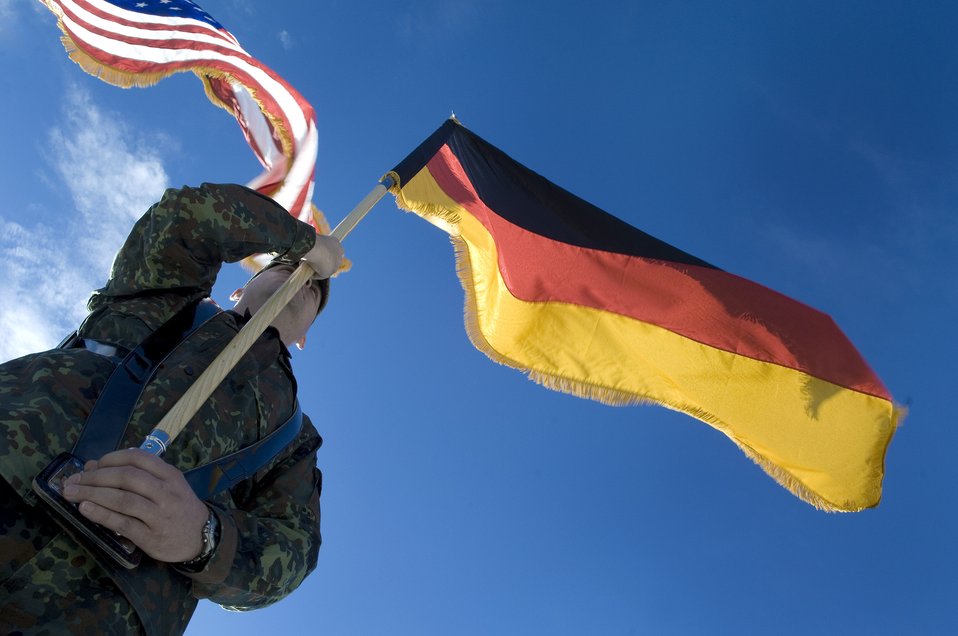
German airman assists with Holloman ceremony

German air force Senior Airman Steffen Hanke holds the German flag while training with U.S. Air Force honor guard members of the 49th Mission Support Squadron Jan. 15 at Holloman Air Force Base, N.M. Airman Hanke was selected to join the base honor guard team and has more than seven years of honor guard experience with the German air force. Holloman AFB is host to the German Air Force Tactical Training Center with more than 300 German air force members stationed there. Germany is one of the strongest allies of the U.S. in NATO and the joint training is important for allied armed forces to train together to ensure effectiveness when called upon to serve together.